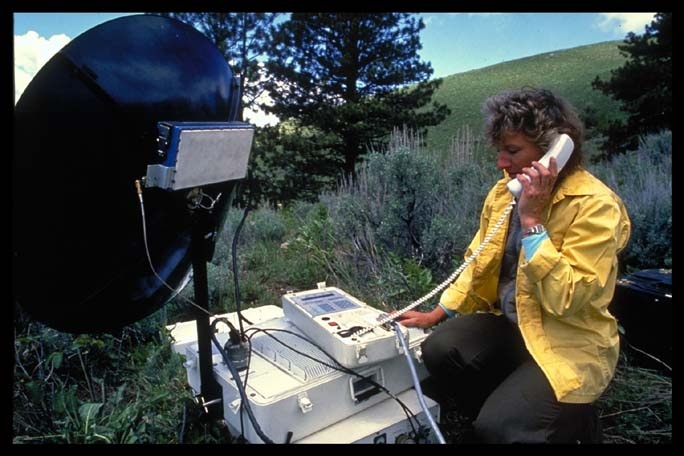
Communications